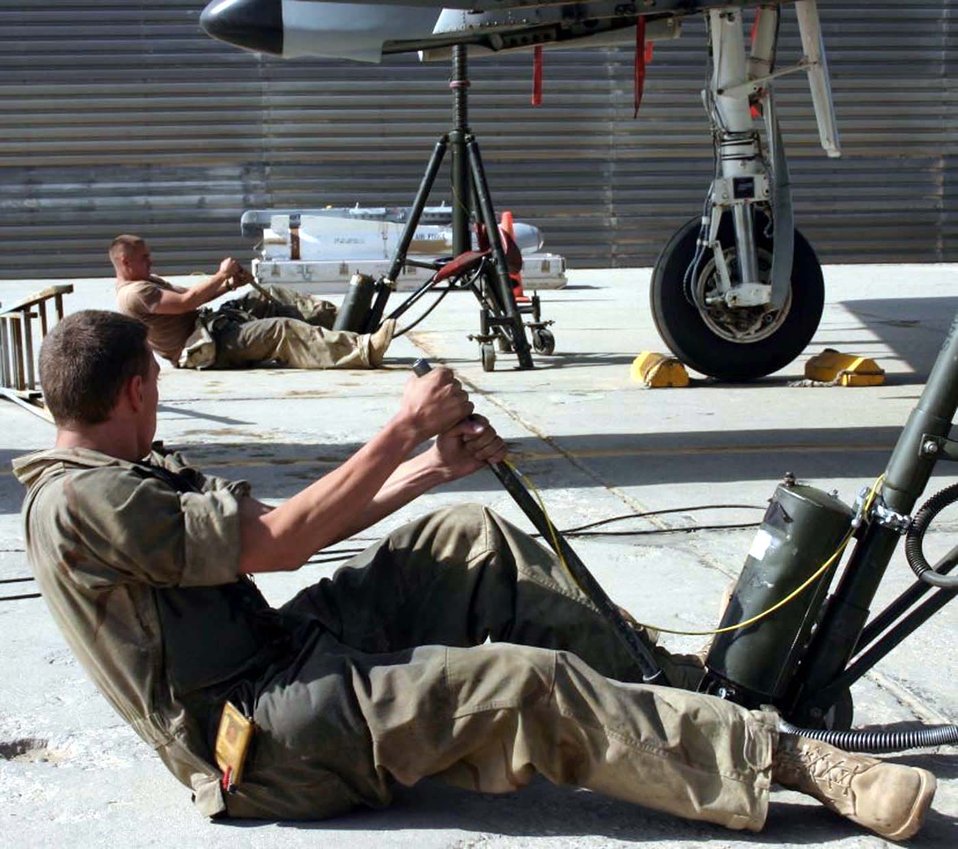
BAGRAM AIR BASE, Afghanistan -- Airman 1st Class Joel Hamm closely watches Airman 1st Class Corey Johnson as the two raise an A-10 Thunderbolt II into the air evenly. The aircraft is lifted to allow maintenance checks before being put back on the flight schedule. Both Airmen are with the 455th Expeditionary Aircraft Maintenance Squadron, and they are deployed from Davis-Monthan Air Force Base, Ariz.